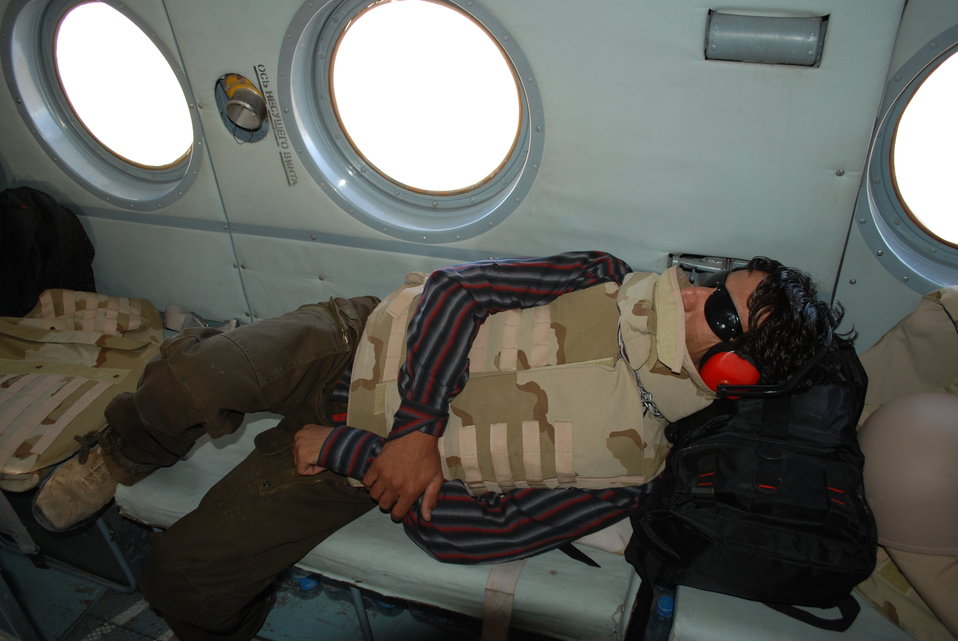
'On the Road' in Kandahar